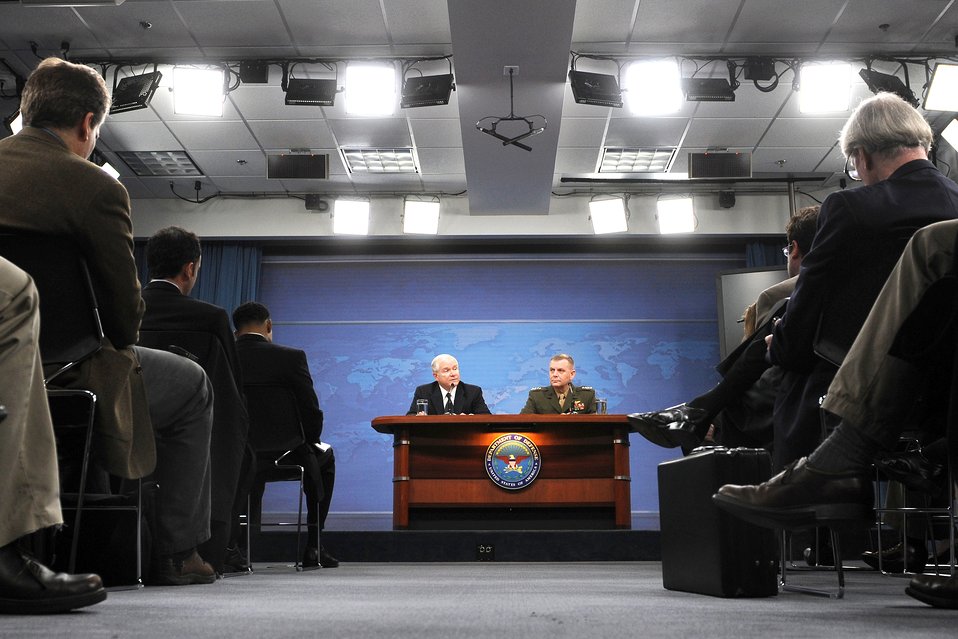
SECDEF briefs 2010 defense budget

Defense Secretary Robert M. Gates and Marine Gen. James Cartwright, vice chairman of the Joint Chiefs of Staff, speak to members of the press about the fiscal 2010 budget April 6 at the Pentagon.